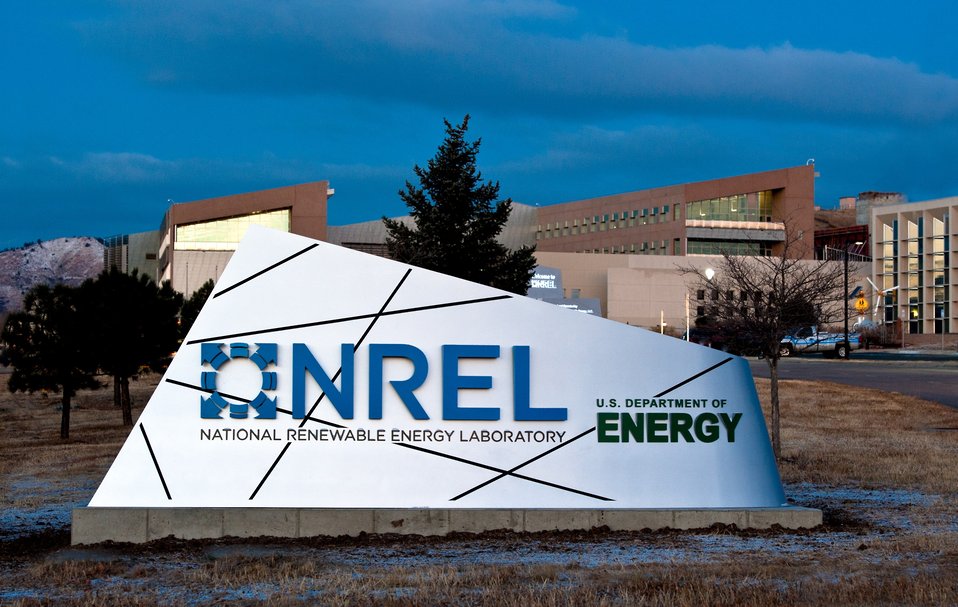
A new sign greets visitors to NREL's campus.

NREL's 35 years in Colorado has contributed to the state's leading role in national green energy technology growth.